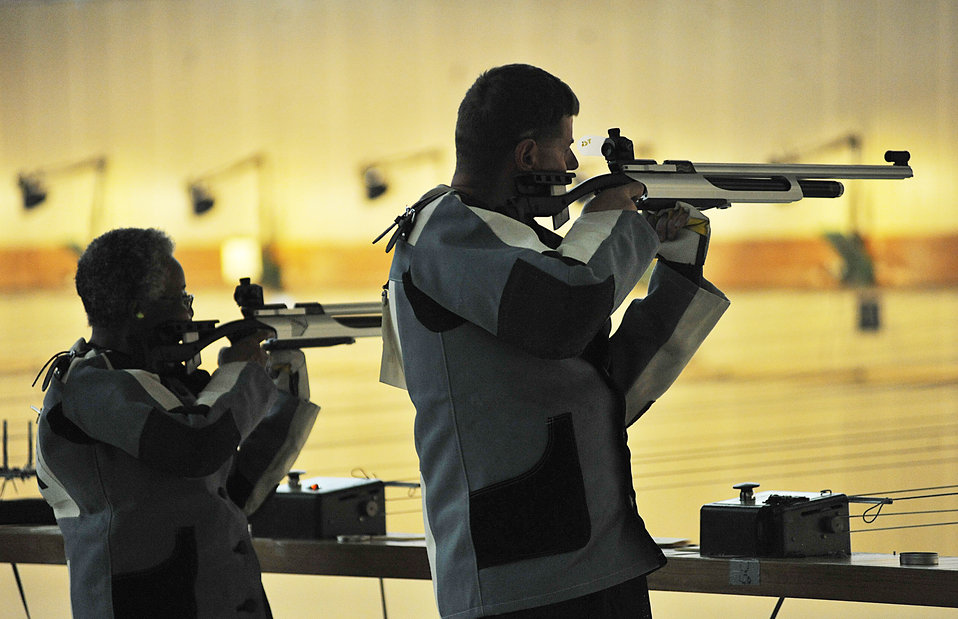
Warrior Games

Gwen Sheppard (left) and Maj. Scott Bullis take aim during the shooting event of the 2012 Warrior Games at the Olympic Training Center in Colorado Springs, Colo., May 3, 2012. Sheppard and Bullis are both with the Air Force team.